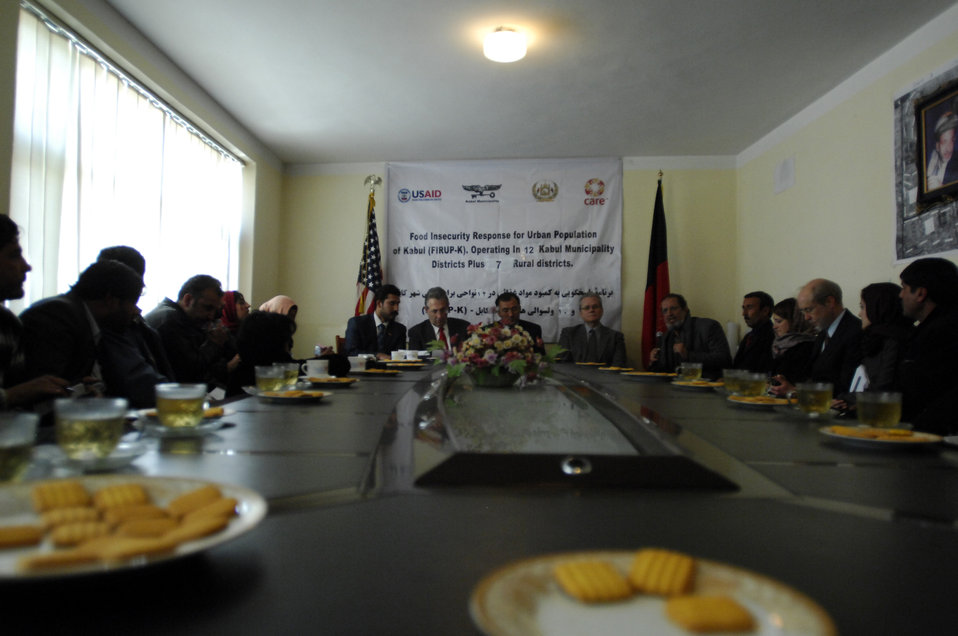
Care98 (1)